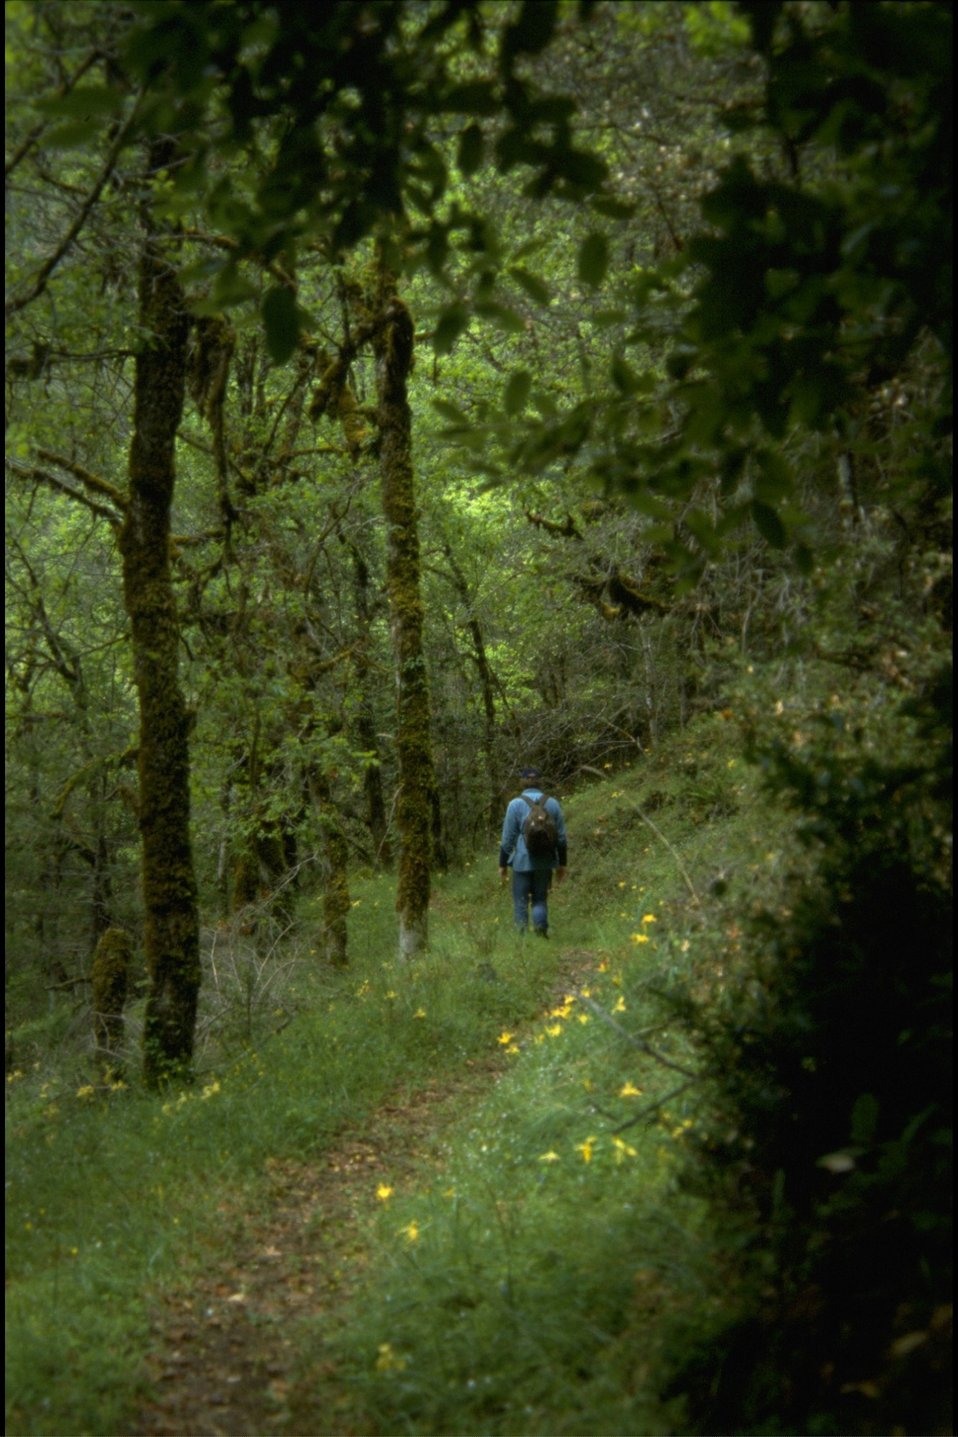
Rogue River Trail, hiker.